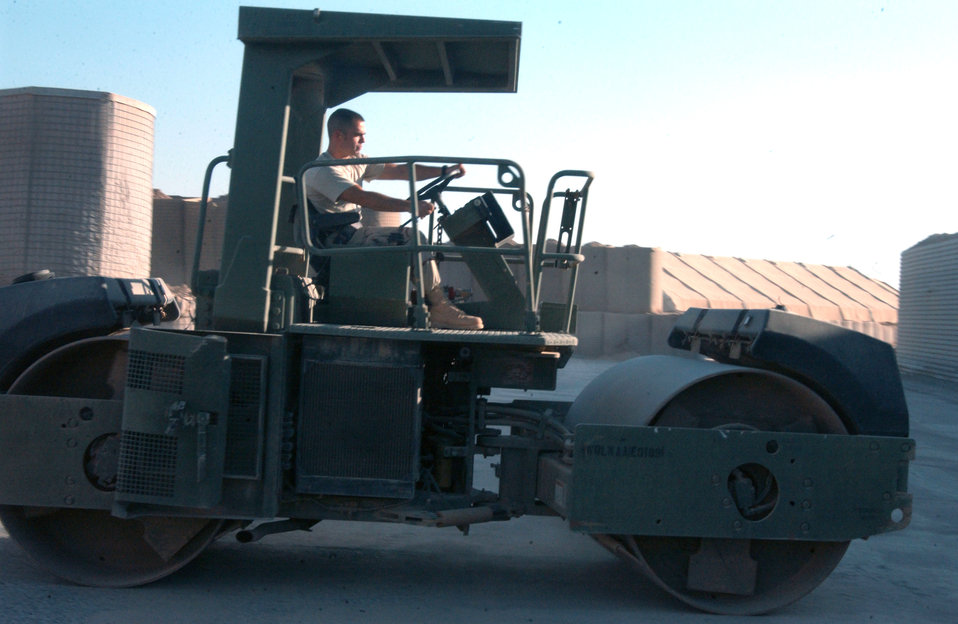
'Dirtboyz' keep Balad airfield operational

Senior Airman William Cravener operates a steel wheel roller Nov. 3 at Balad Air Base, Iraq. Airman Cravener is a 332nd Expeditionary Civil Engineer Squadron pavements and equipment journeyman deployed from Spangdahlem Air Base, Germany.